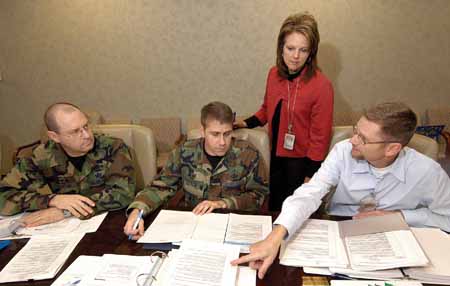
Leaders get 'lean' with green belt training

(From left) Col. Michael Pelletier, 555th Aircraft Sustainment Squadron commander, Col. James Fulton, 727th Aircraft Sustainment Group commander, DeLana Aylor, 448th Combat Sustainment Wing financial management and Ernie Guttery, 76th Maintenance Support Group, discuss their project to standardize the process and reduce the time required for organizational change request packages during a green belt class breakout session.